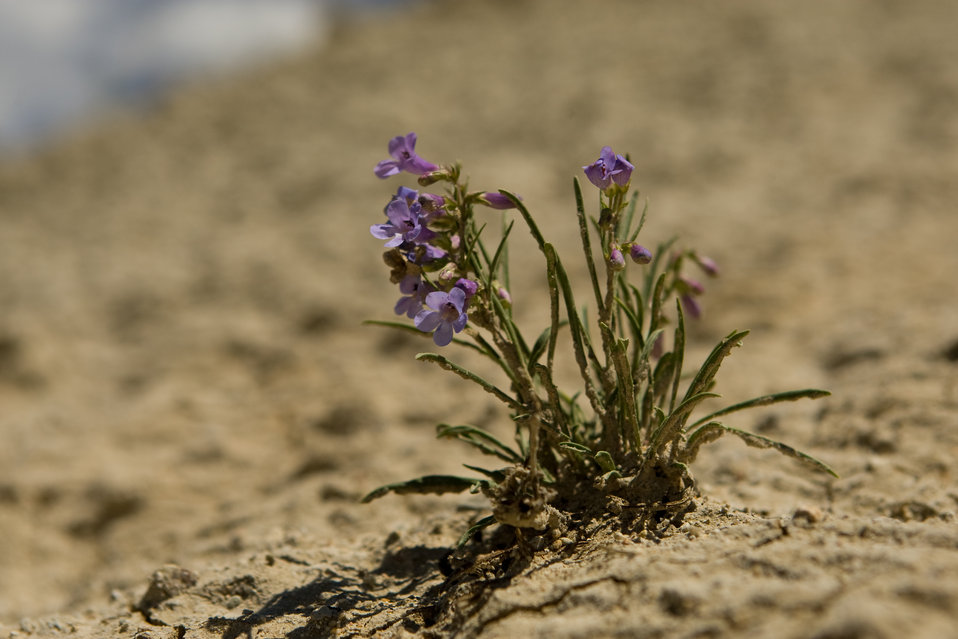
Colorado Rare Plant Conservation Initiative

The Colorado Rare Plant Conservation Initiative (RPCI) is a partnership of 23 statewide and regional agencies, private organizations, and academic institutions working to conserve 121 rare plants in Colorado. As part of these efforts the group developed the Colorado Rare Plant Conservation Strategy, developed Best Management Practices to reduce energy development impacts, addressed climate change, and developed focused strategies for the conservation of individual species at eight priority landscapes. The group has also worked to coordinate volunteer efforts for plant conservation across the state.